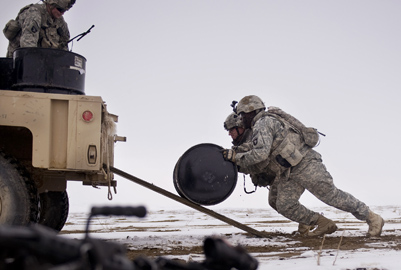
C-17s deliver largest OEF fuel resupply

Soldiers from Task Force Currahee, 4th Brigade, 101st Airborne Division, recover bundles of fuel that were air delivered recently to Forward Operating Base Waza K'wah in the Paktika province of Afghanistan via a C-17 Globemaster III. The fuel was delivered to help sustain members of Task Force Currahee, whose only means of re-supply is through air delivery.